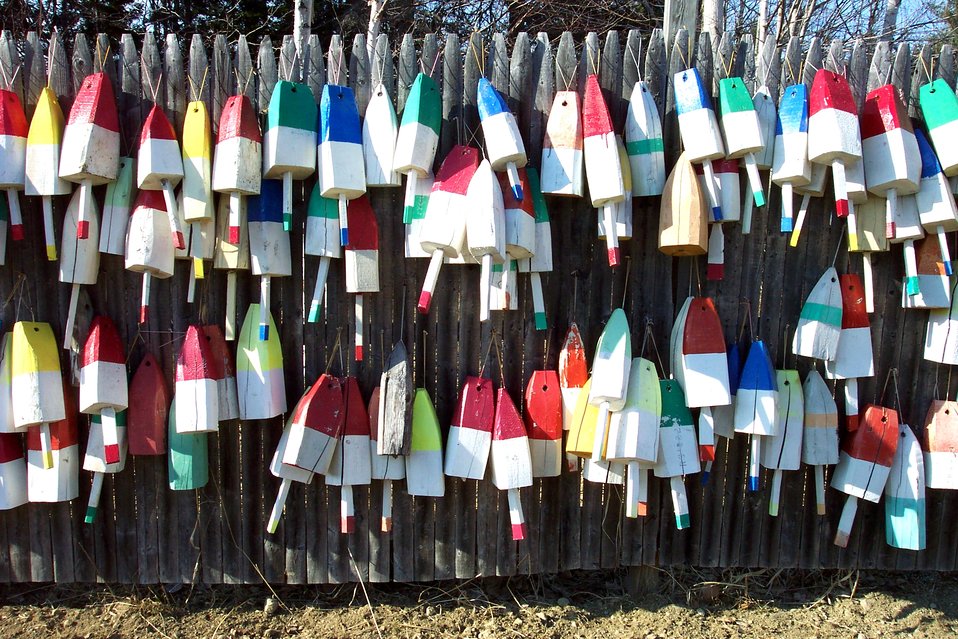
Floats for lobster traps adorning a Maine fence.